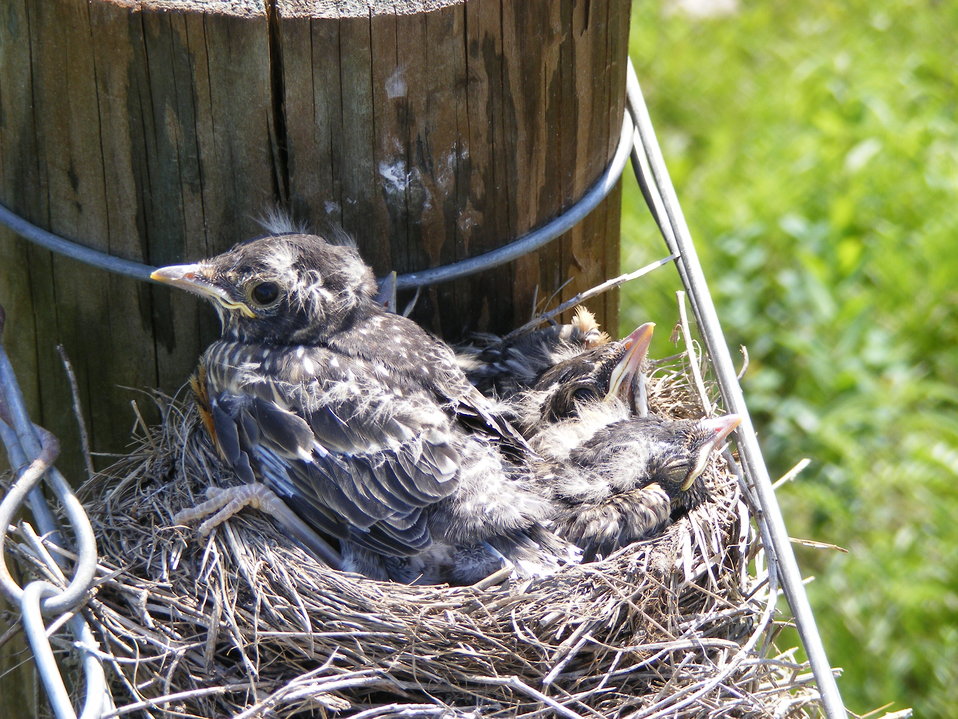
Getting Too Big

These American robin nestlings fit tightly in the nest that was built on a barbed-wire fence post. It won't be long before these guys are on their own.